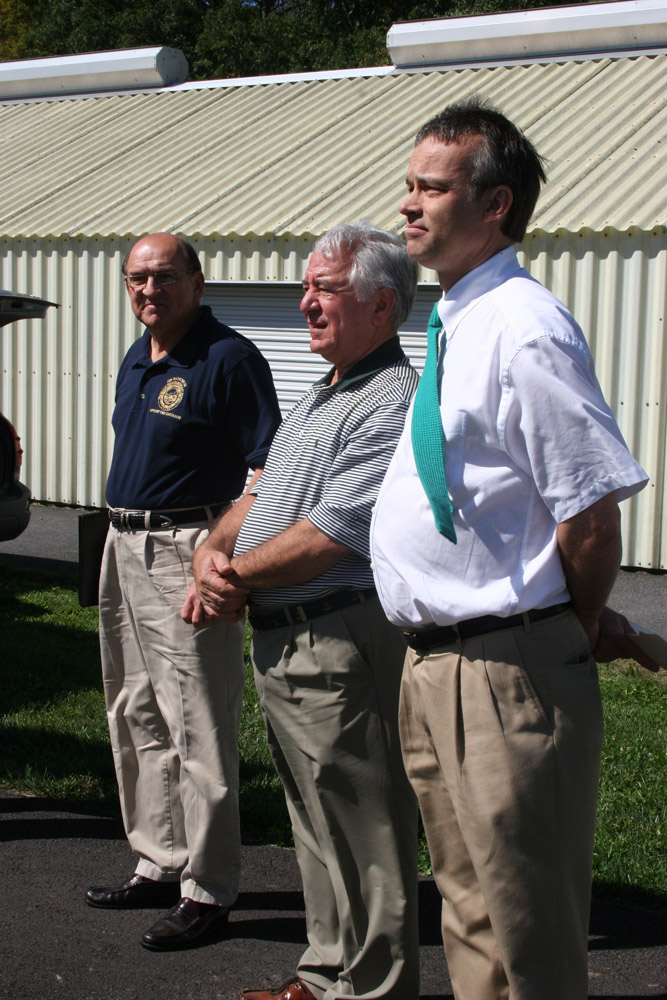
Freshwater Folk Festival

The 5th Annual Freshwater Folk Festival at White Sulphur Springs National Fish Hatchery in West Virginia.Credit: USFWS